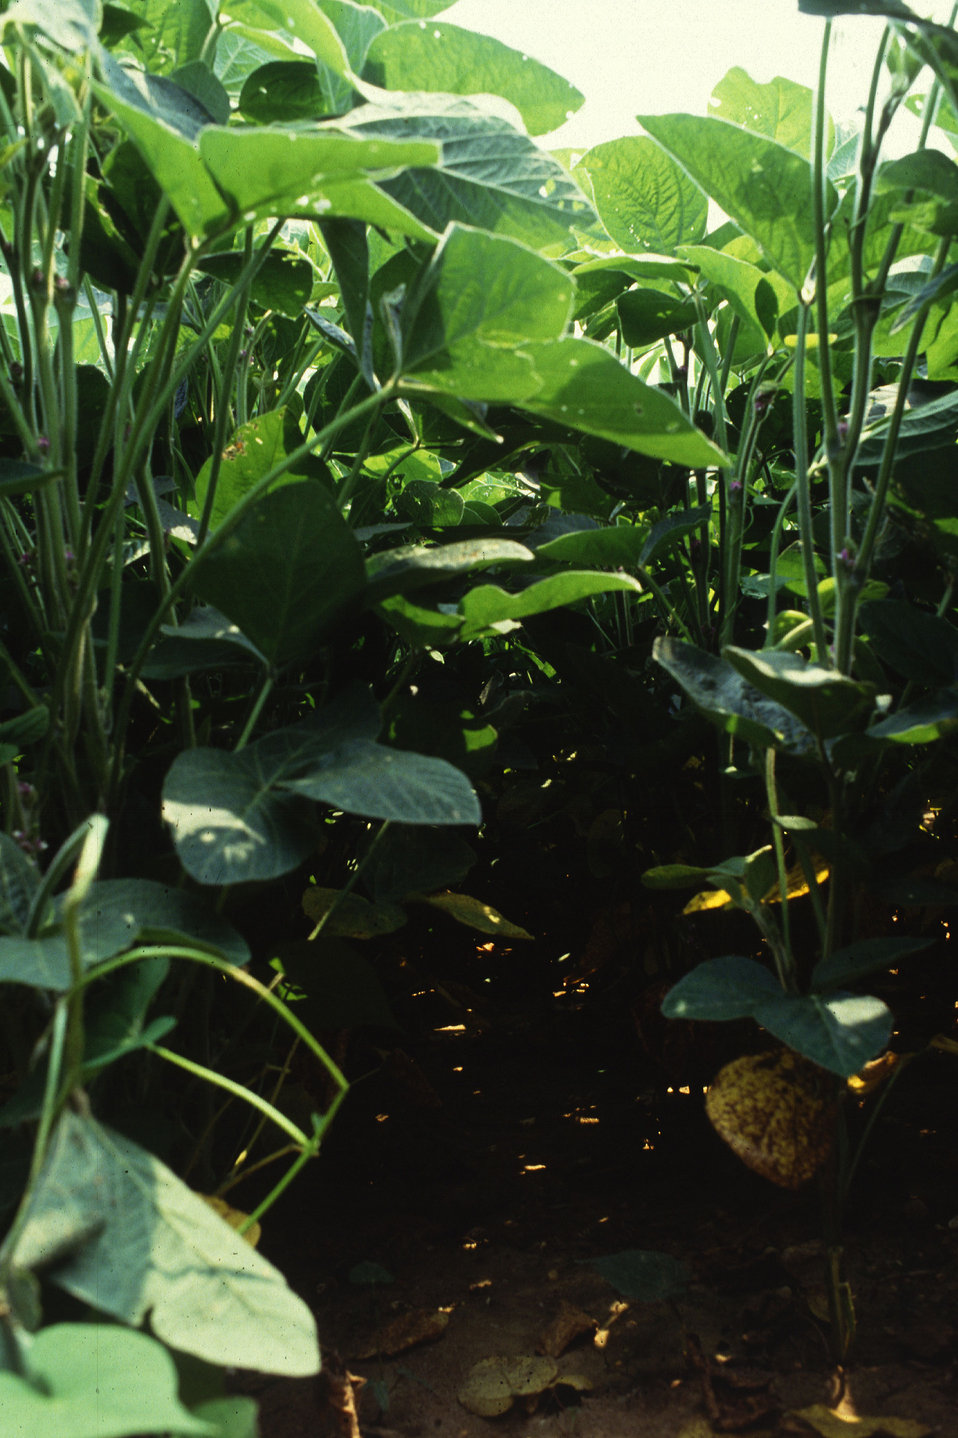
Shading from soybeans leaves decreases the percentage of oleic acid in the seeds in relation to other fatty acids.